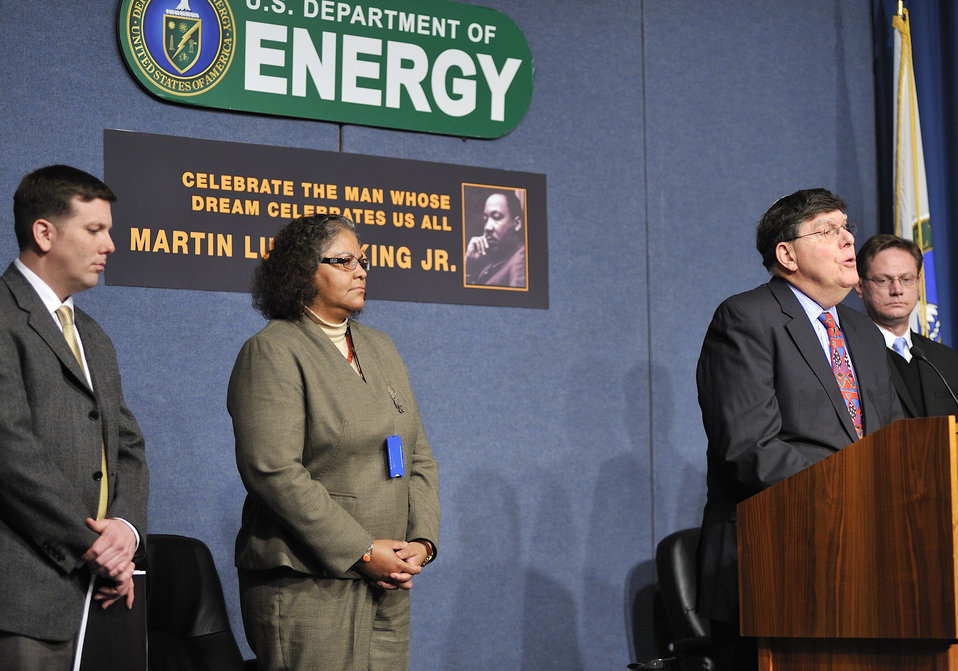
Martin Luther King Jr. Day Celebration at DOE headquarters.